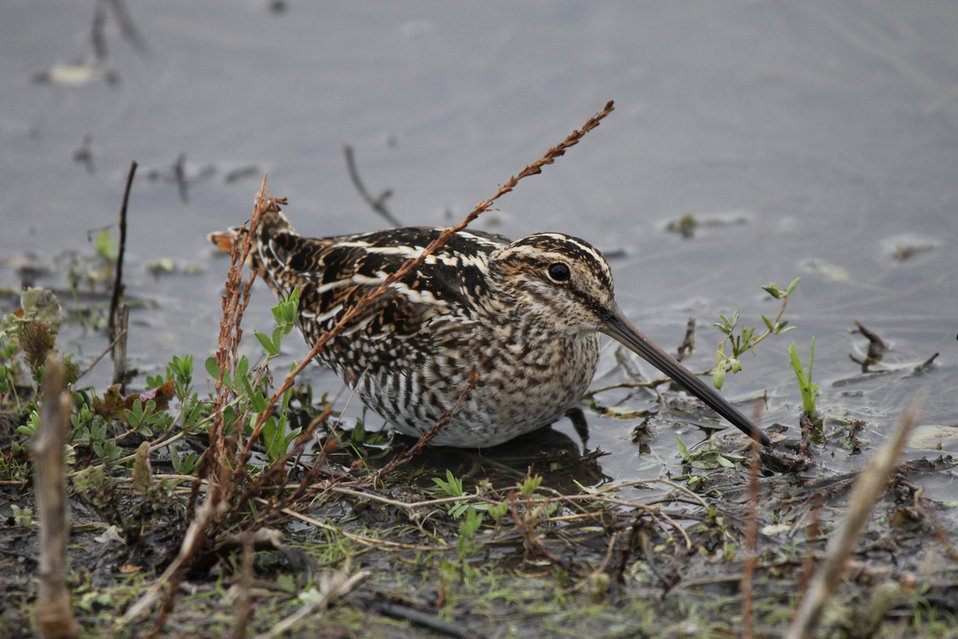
Wilson's snipe

San Luis National Wildlife Refuge, CA
Nov. 6, 2011